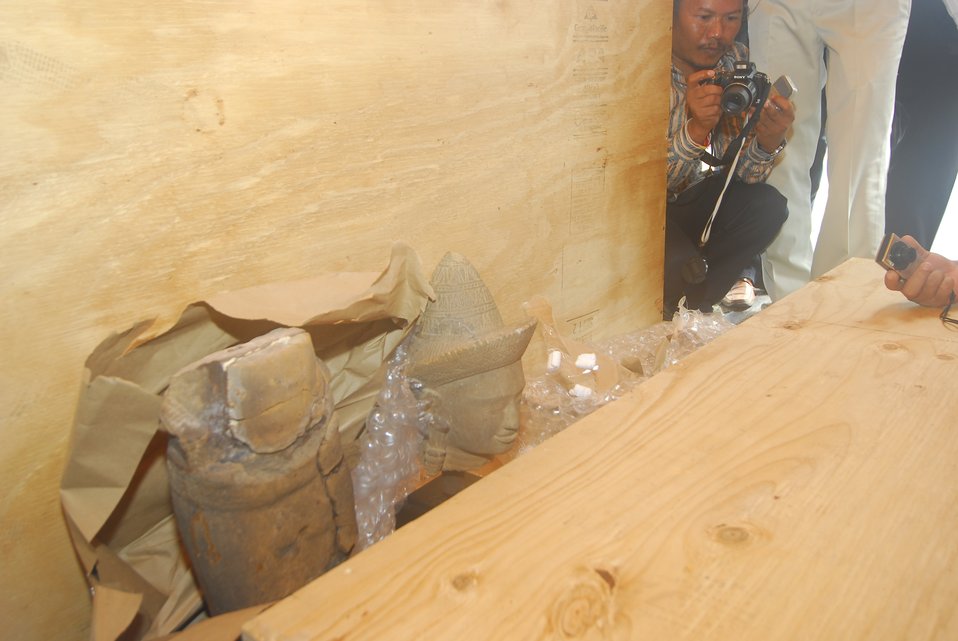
Artifacts Are Inspected at Repatriation Ceremony

Artifacts estimated to be more than 1,000 years old were inspected at a repatriation ceremony in Sihanoukville, Cambodia, on June 17, 2010.